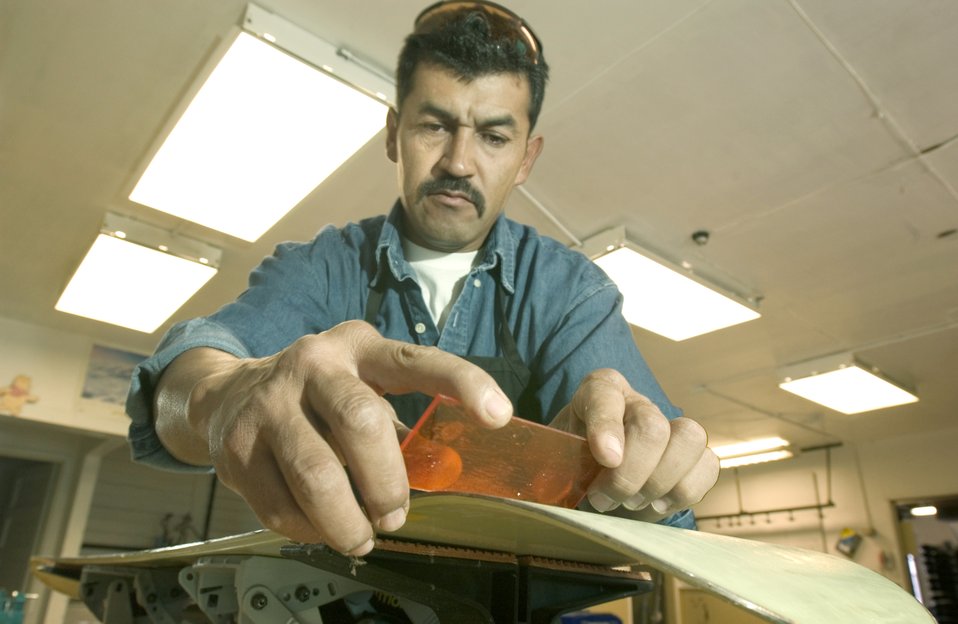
Mountain Home 'maintainer' readies skis for season

MOUNTAIN HOME AIR FORCE BASE, Idaho -- Raul Hernandez uses a plastic scraper to shave excess wax off a snowboard he is refurbishing at the base outdoor recreation supply office. The base's only certified ski-equipment maintainer cares for more than 600 pairs of skis, 100 snowboards and countless cross-country skis, snowshoes and sleds.